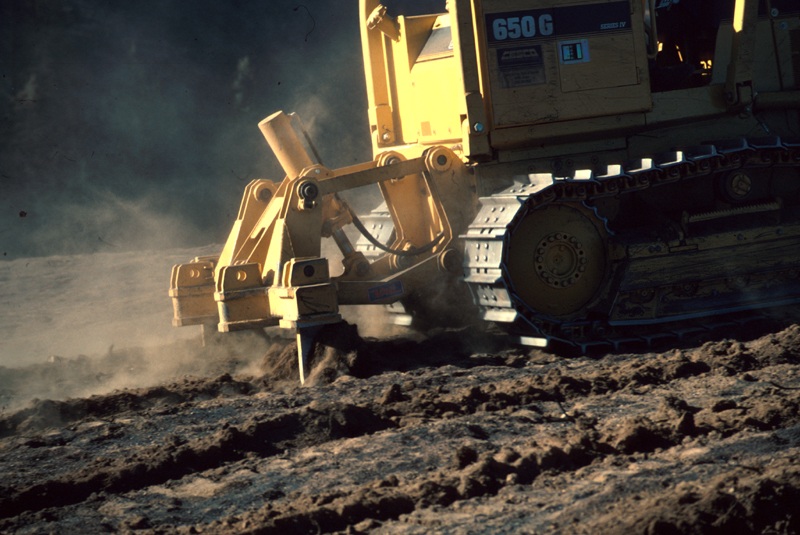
Crested Wheatgrass Cheatgrass Range Restoration Project